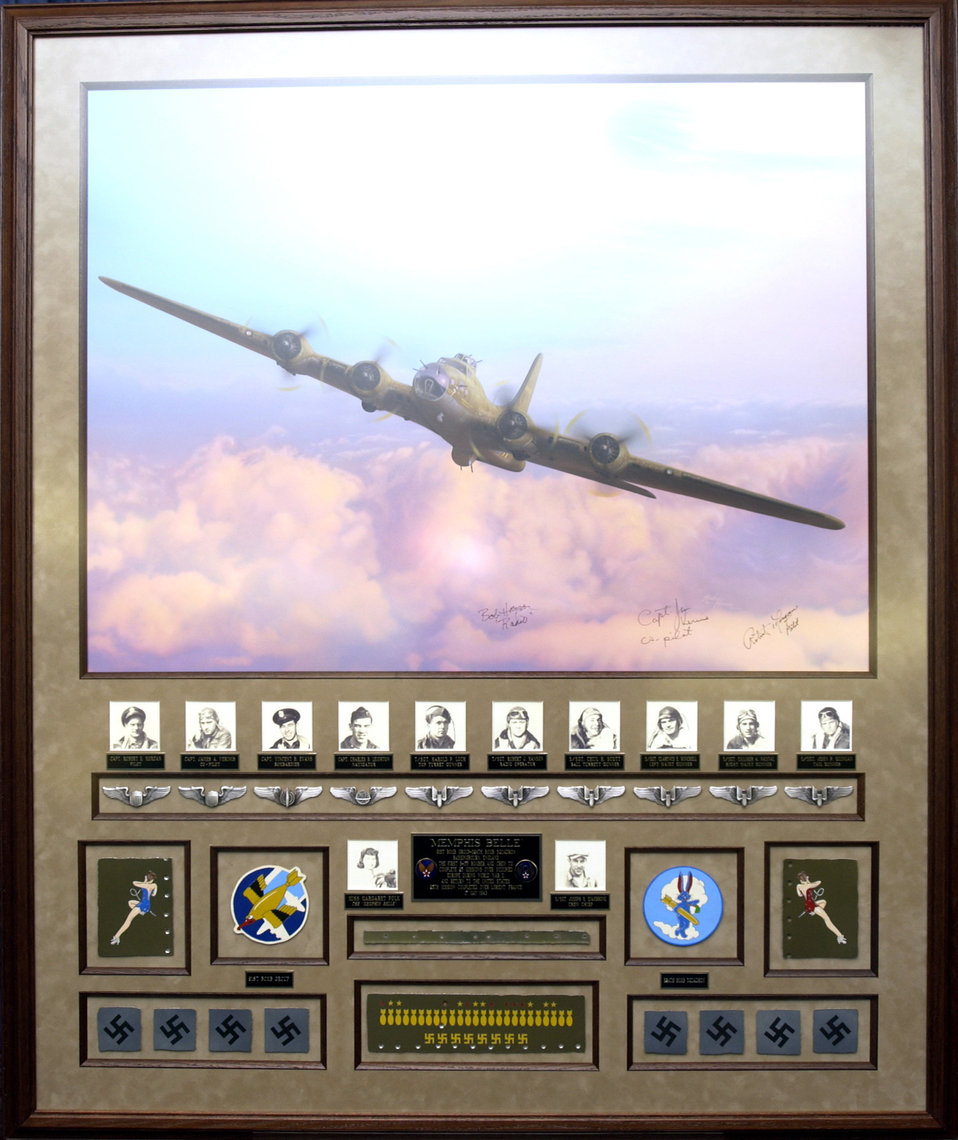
Pretty as a picture

WASHINGTON (AFPN) -- Artist Mickey Harris' painting of the Memphis Belle was unveiled during a ceremony in the Pentagon on Jan. 6. The painting of the historical Boeing B-17 Flying Fortress was dedicated to the Air Force Art Program on behalf of the Memphis Belle Memorial Association and the Memphis Belle War Memorial Foundation. The Memphis Belle belonged to the 91st Bombardment Group (Heavy) during World War II and was the first bomber to complete 25 combat missions before returning to the United States.